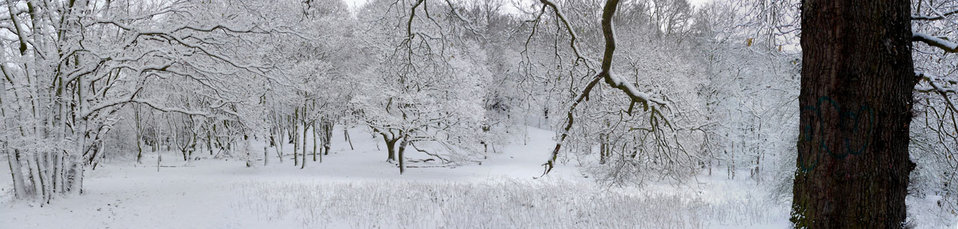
Snowy winter.